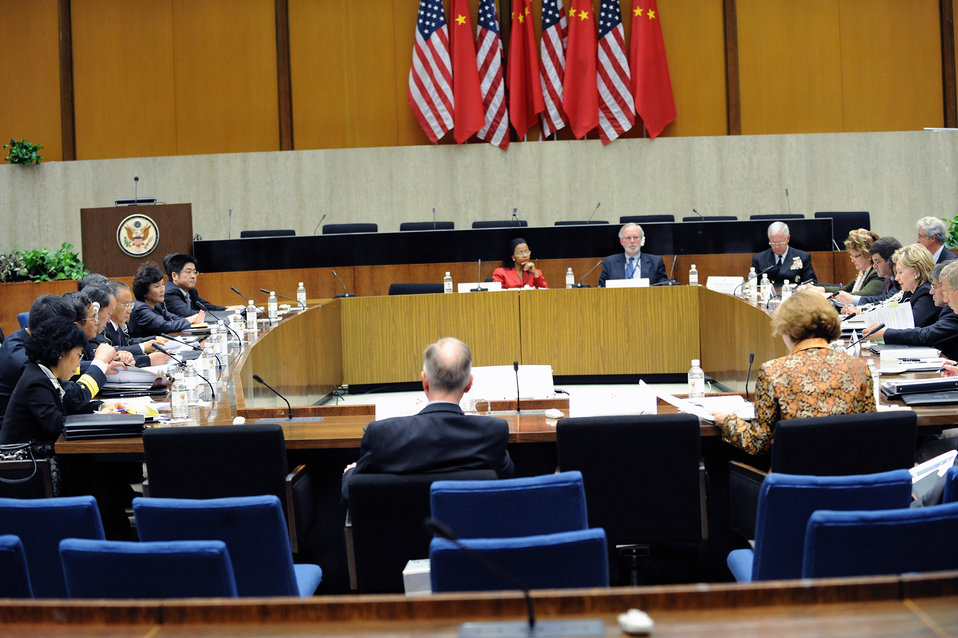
Secretary Clinton Attends U.S.-China Strategic and Economic Dialogue

U.S. Secretary of State Hillary Rodham Clinton at the Strategic Track Session 1 on Bilateral Relations during the U.S.-China Strategic and Economic Dialogue at the U.S. Department of State in Washington, DC July 27, 2009.